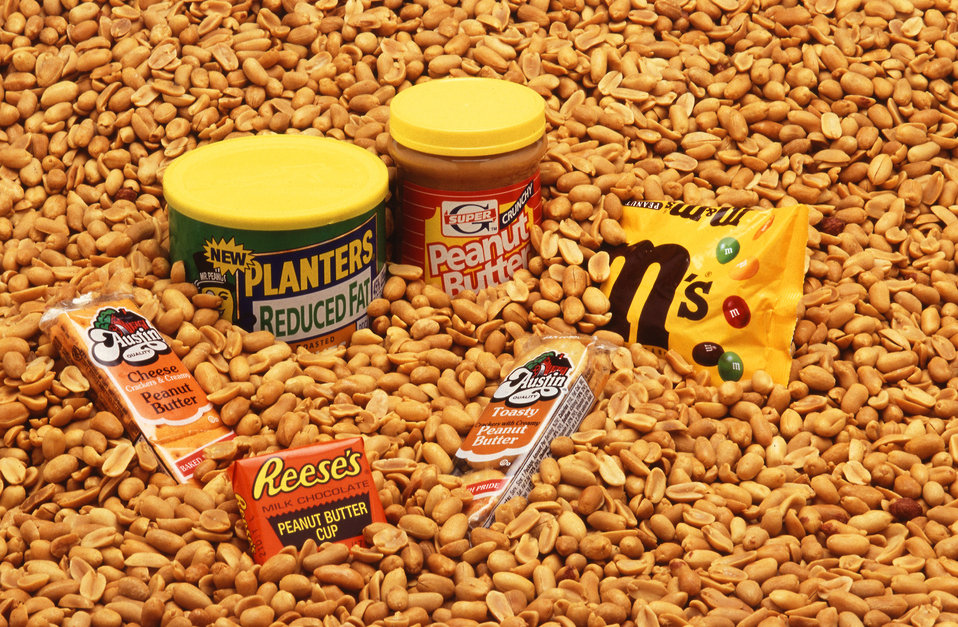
The U.S. produces between 3 and 4 billion pounds of peanuts annually, and about 40 percent of these go into processed foods, from salted peanuts, candy, crackers, and cookies to peanut butter. They're a major source of vegetable oil too. U.S. Department of Agriculture’s (USDA) Agricultural Research Service (ARS) scientists have worked to improve peanut flavor and quality both by breeding better peanuts and by finding better ways to process them. With the help of precision lab instruments and the sensitive noses of volunteers, USDA ARS chemists have pinpointed chemicals that are crucial to that unmistakable peanutty flavor. This work reveals that roasted peanuts probably owe their rich, nutty aroma to a blend of about a dozen natural compounds. The findings could be used to enrich the flavor of roasted peanuts by adding back compounds that are sometimes lost in processing.